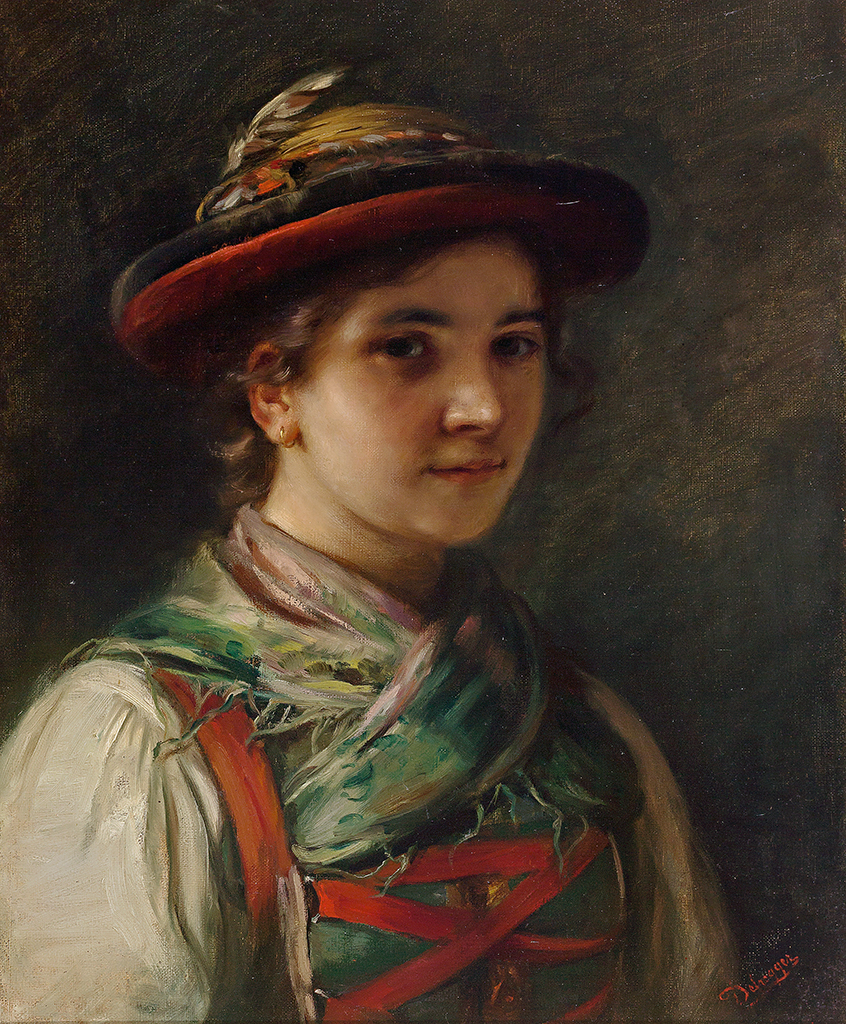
Franz von Defregger Brustbild einer jungen Tirolerin mit Hut